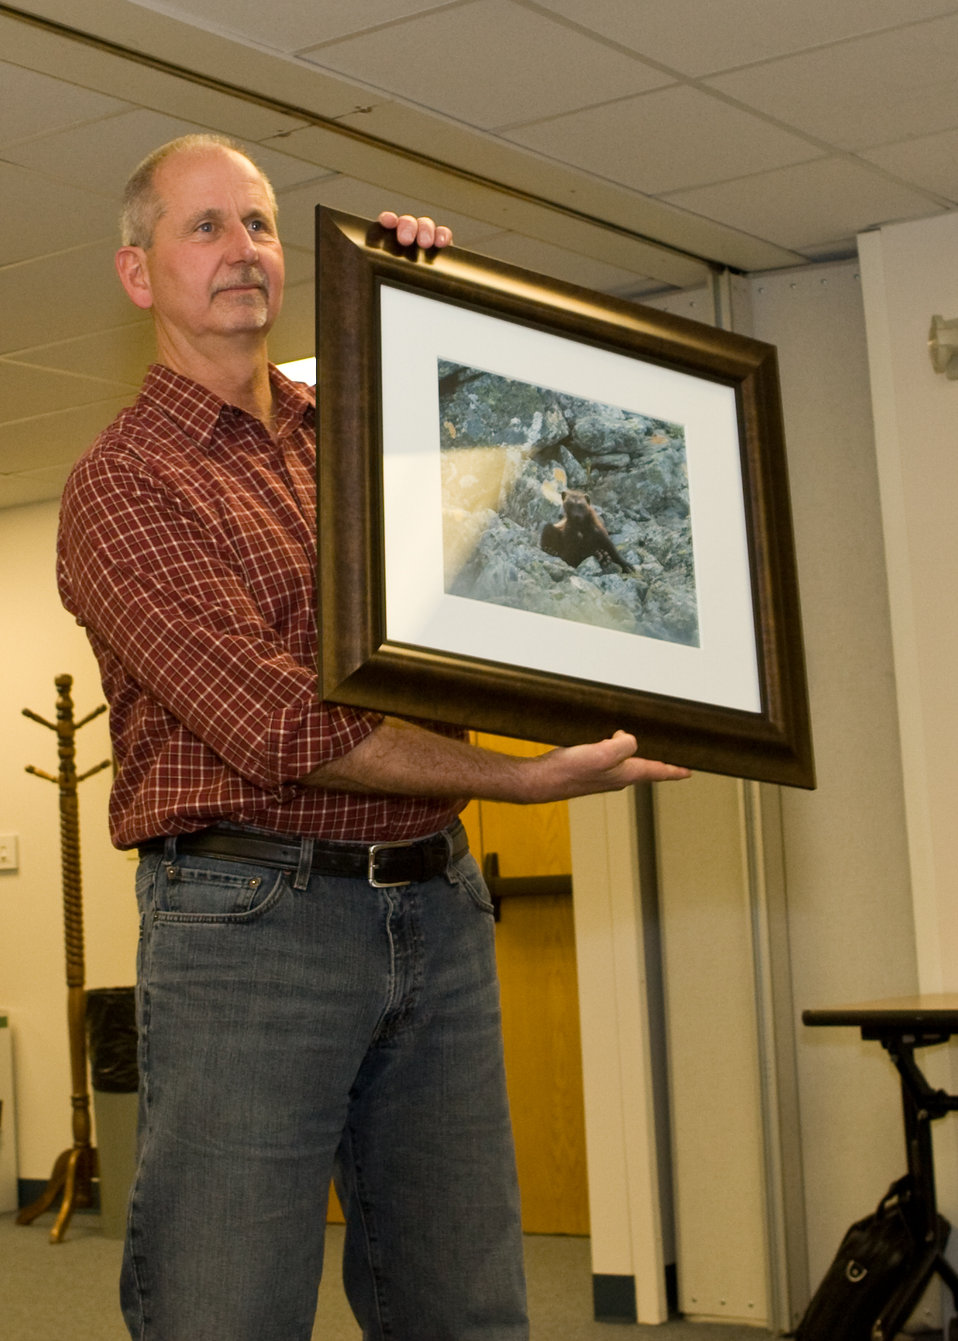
Ed Bangs Displays a Framed Image of one of his Favorite Animals: the Wolverine (gulo gulo)

On May 23rd, 2011 The U.S. Fish and Wildlife Service Mountain-Prairie Region honored three of the most influential individuals in wolf recovery in the Northern Rocky Mountains: Ed Bangs, Steve Fritts, and Margot Zallen. Ed Bangs started the event with an hour-long presentation, “Wolf Conservation: The Good, The Bad, and The Ugly.”

Following the presentation, Regional and National leadership recognized the imminent retirement of Ed, Steve, and Margot with a variety awards for their contributions.